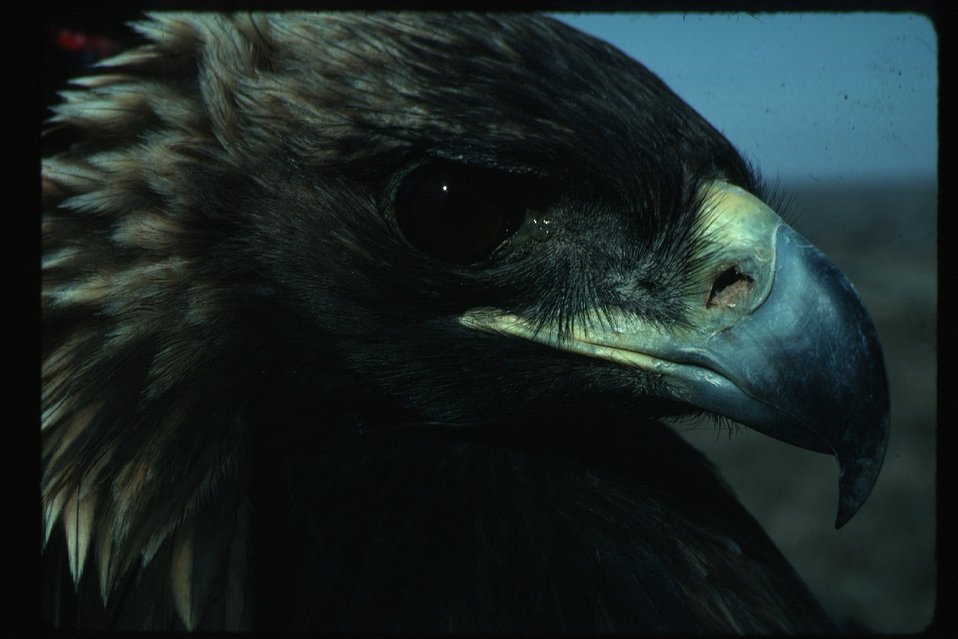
Golden Eagle Birds of Prey National Conservation Area BOP NCA Owyhee Field Office LSRD Lower Snake River District